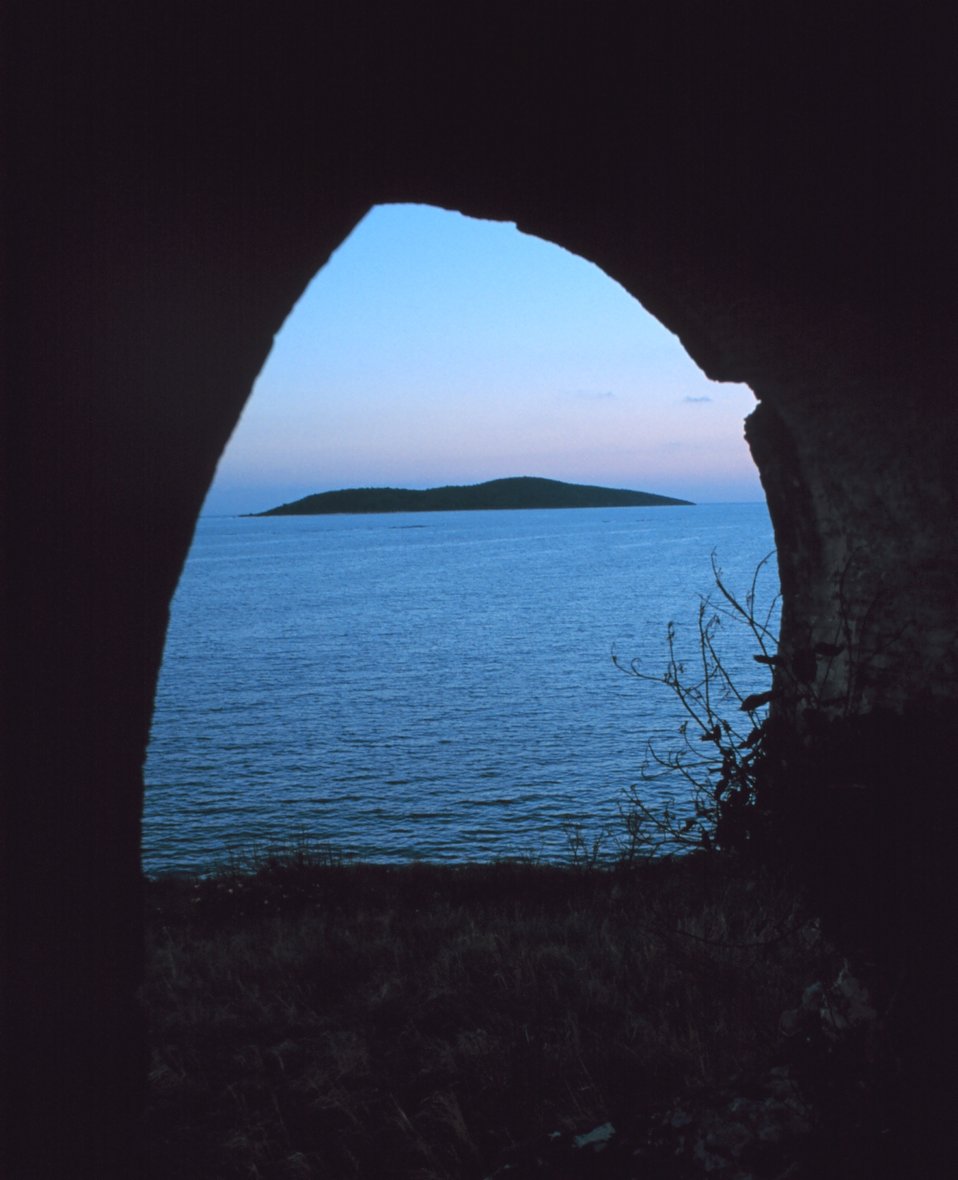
View from Danish windmill ruin of Buck Island Reef National Monument.